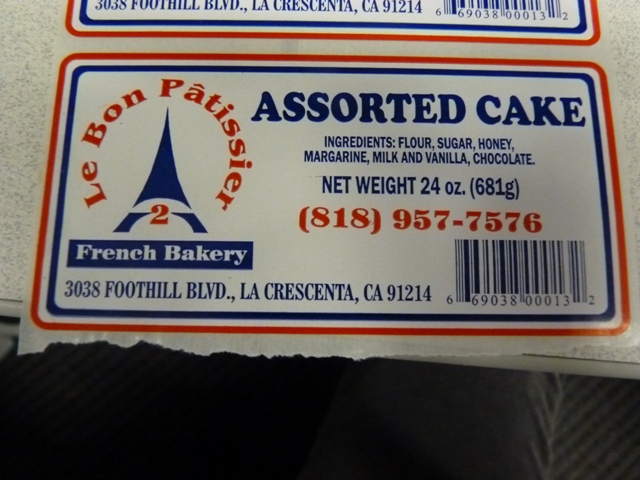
RECALLED - Pastry Products

April 5, 2011 – Product Recall – Le Bon Patissiere-2, Inc. Announces Voluntary Recall On Select Le Bon Patissiere Products That Contain Undeclared Allergens.